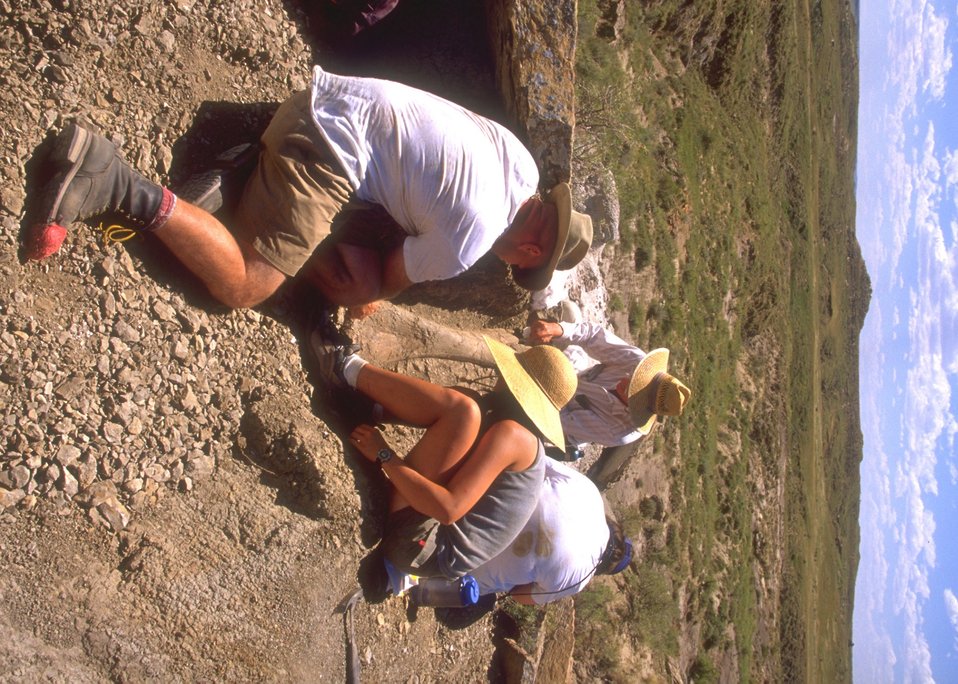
Paleontologist working a dig for dinosaur bones, Lance Creek Fossil Area, Newcastle Field Office.